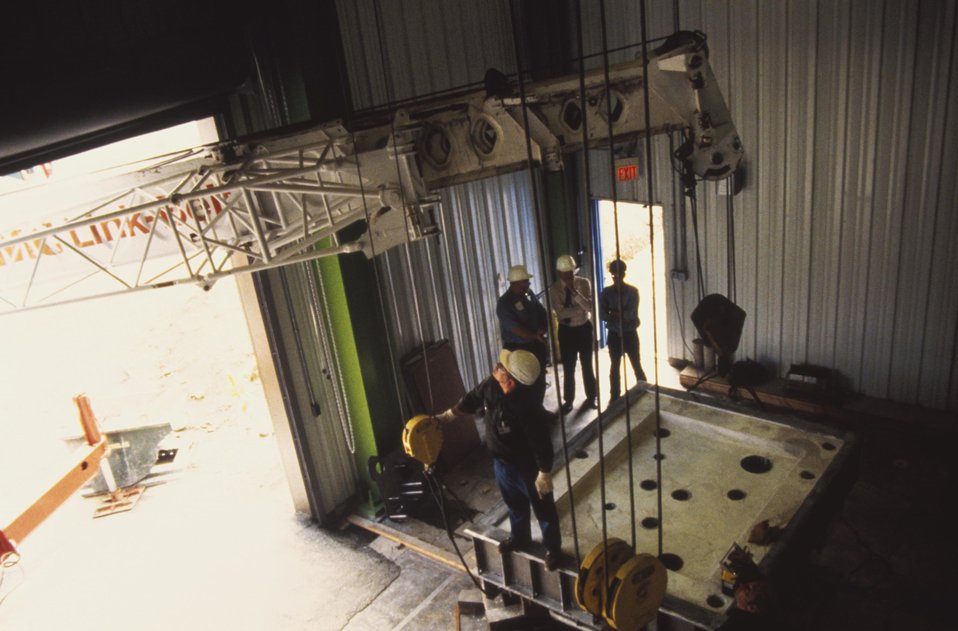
WORKERS USE CRANE TO HOIST THE MELTER TOP. IT WILL BE POSITIONED OVER THE REFRACTORY BLOCK TO CAP THE CERAMIC MELTER.

BETWEEN 1966 AND 1972, SOME 600 METRIC TONS OF SPENT NUCLEAR FUEL WERE REPROCESSED AT THE NUCLEAR FUEL SERVICES, INC. PLANT IN WEST VALLEY, NEW YORK. THE FUEL RODS WERE CON- VERTED INTO A SLUDGE WHICH WAS STORED IN UNDERGROUND TANKS ON THE SITE. AT THE TIME OF THE PLANT'S CLOSING, 600,000 GALLONS OF HIGH-LEVEL RADIOACTIVE LIQUID WASTE WERE STORED IN THE TANKS. TODAY, THE FACILITY, RENAMED THE WEST VALLEY DEMONSTRATION PROJECT, IS BEING USED TO ILLUSTRATE TECH- NIQUES FOR THE SOLIDIFICATION AND PREPARATION OF HIGH-LEVEL WASTE FOR PERMANENT DISPOSAL. TECHNICIANS WILL CONVERT THE RADIOACTIVE SLUDGE INTO A SAFE GLASS SOLID (BOROSILICATE GLASS) USING A SLURRY-FED CERAMIC MELTER. SELECTED AREAS OFTHE REPROCESSING FACILITY ARE BEING DECONTAMINATED AND MODI-FIED FOR THE PROJECT, AND PLANNING HAS BEEN COMPLETED FOR MAJOR REFURBISHMENTS IN OTHER KEY AREAS NEEDED TO SUPPORT IT. SOLIDIFICATION OF THE HIGH-LEVEL WASTES AT WEST VALLEY IS EXPECTED TO BE COMPLETED IN 1990.